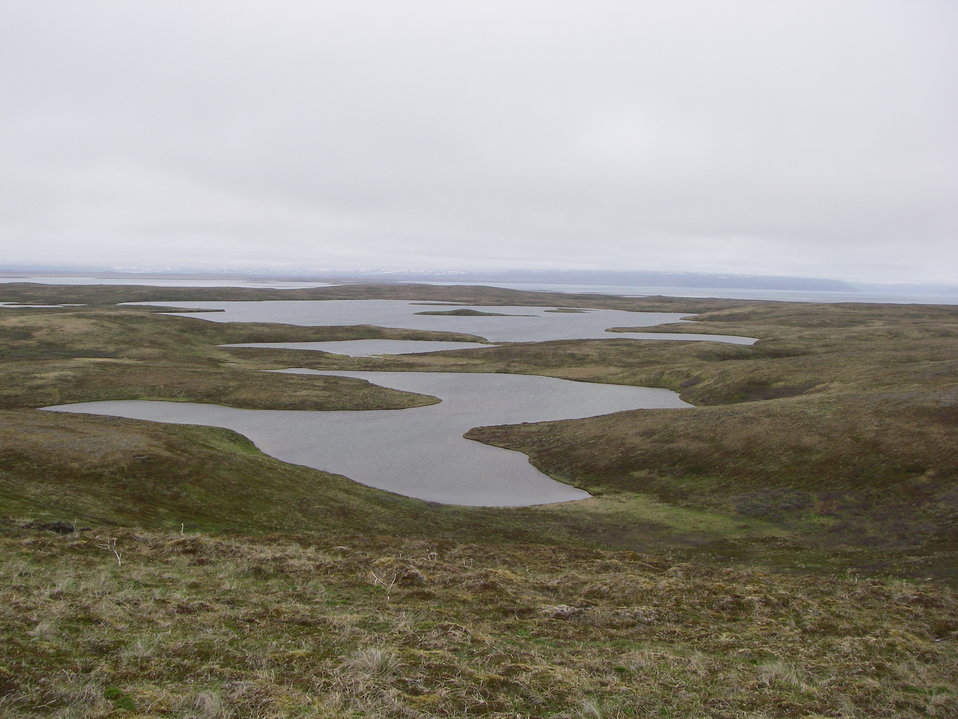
Izembek Wilderness

Wilderness north of Kinzarof Lagoon, Izembek National Wildlife Refuge
Photo by Kristine Sowl,
USFWS, Public Domain